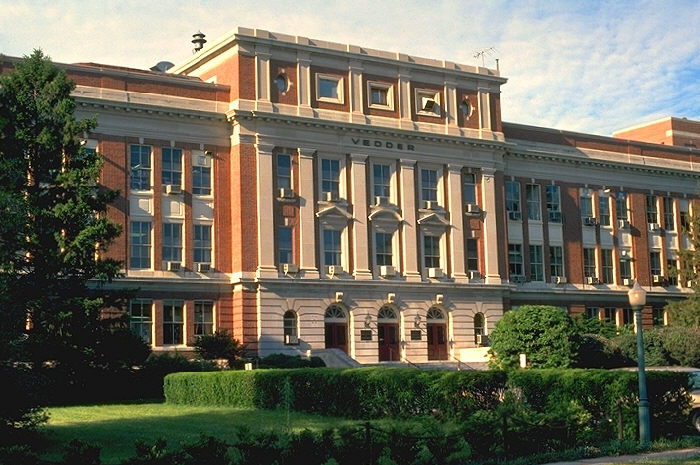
Original Walter Reed Army Institute of Research at Walter Reed Army Medical Center, Washington, DC.